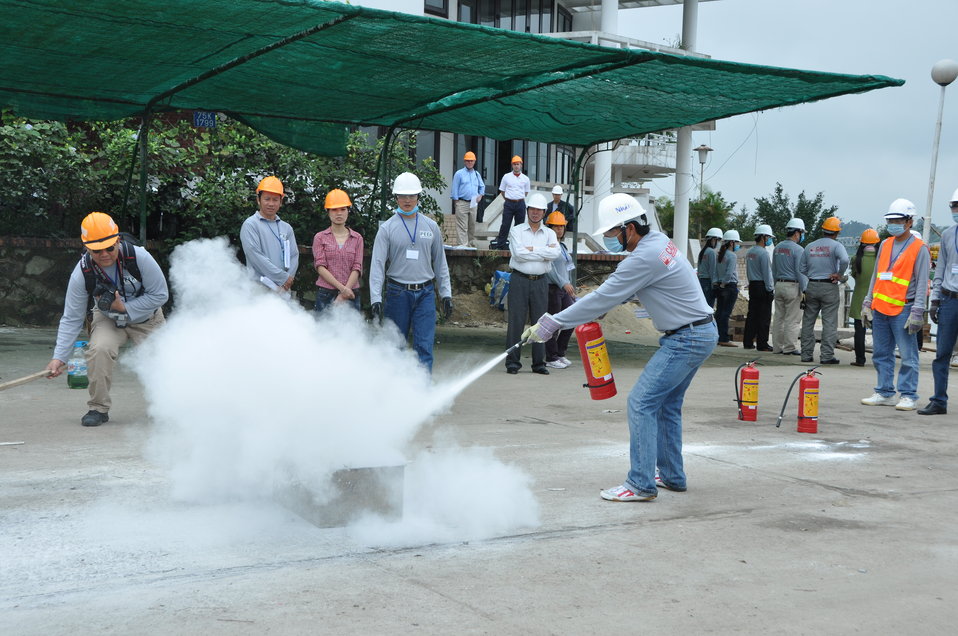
Disaster and Emergency Training Funded by USAID in Hue, Vietnam